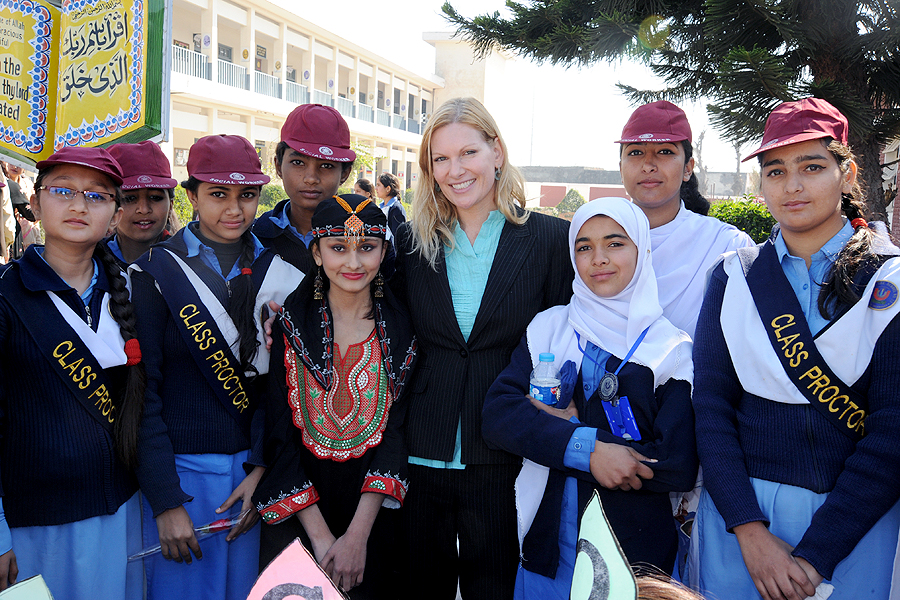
DSC 0031United States and Pakistan Launch the Pakistan Reading Project